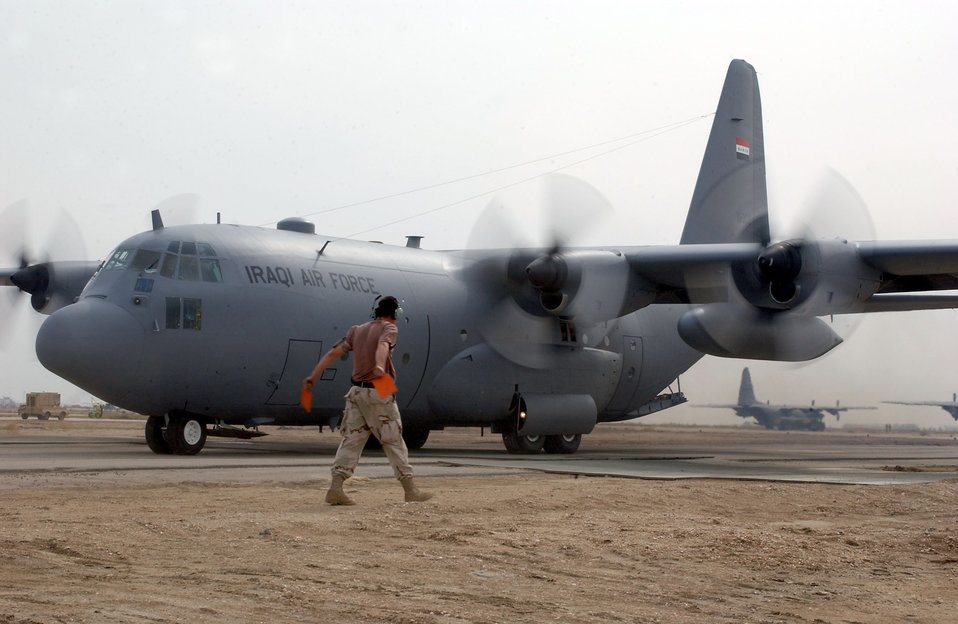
Hercules at work

TALLIL AIR BASE, Iraq -- Senior Airman Brad Turner directs an Iraqi C-130 Hercules as it backs out from its hardstand here Feb. 22. Airman Turner is a C-130 crew chief from the 463rd Aircraft Maintenance Squadron at Little Rock Air Force Base, Ark. The C-130 aircraft and crew are assigned to the 23rd Airlift Squadron here.